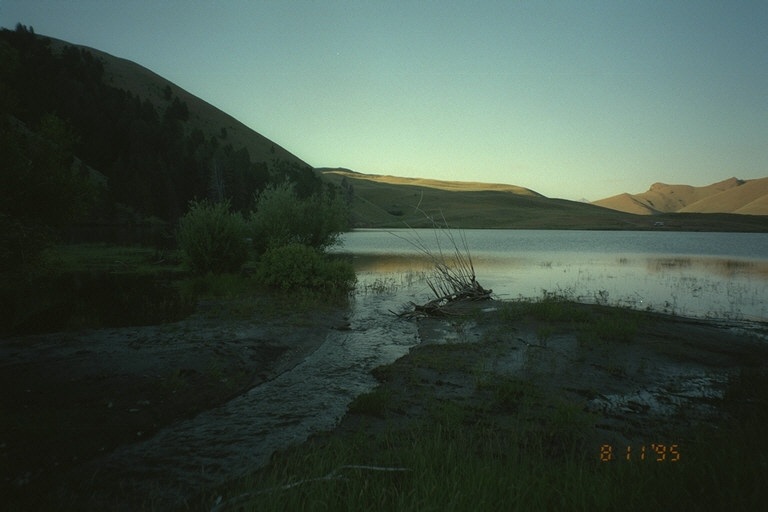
Riparian area Public Lands Salmon Field Office UCSC Upper Columbia Salmon Clearwater District